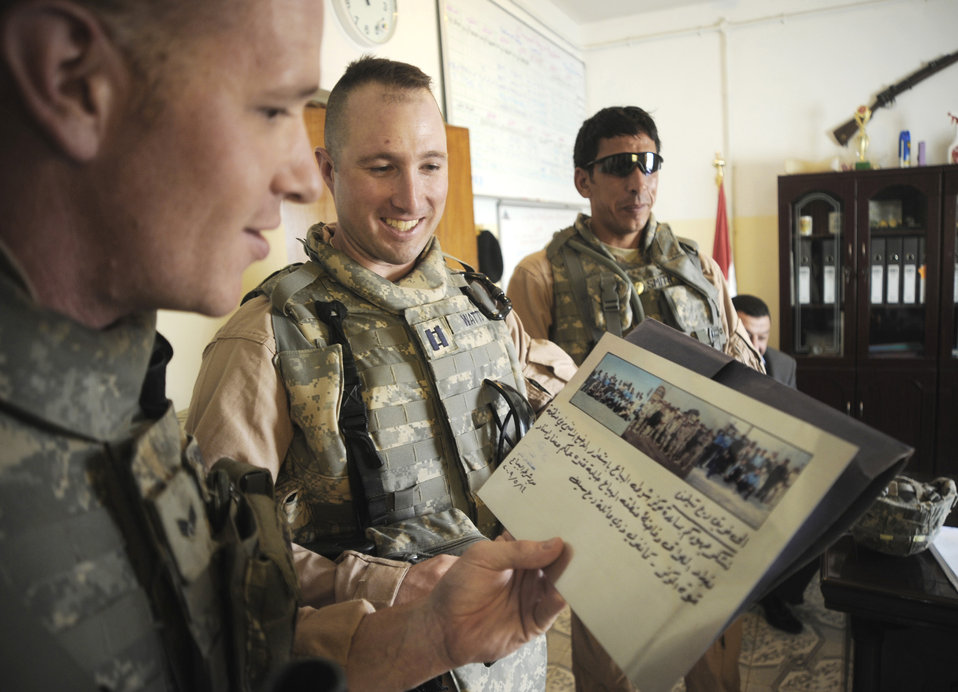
Airmen honor fallen comrade in arms

Capt. David Watts and Senior Airman Cole Magin reminisce as they look at pictures on a plaque used as a memorial for Staff Sgt. John T. Self who was killed in action two years ago when an improvised explosive device struck his vehicle May 14 in Iraq. Captain Watts and Airman Magin served with Sergeant Self and currently are deployed in support of Operation Iraqi Freedom.